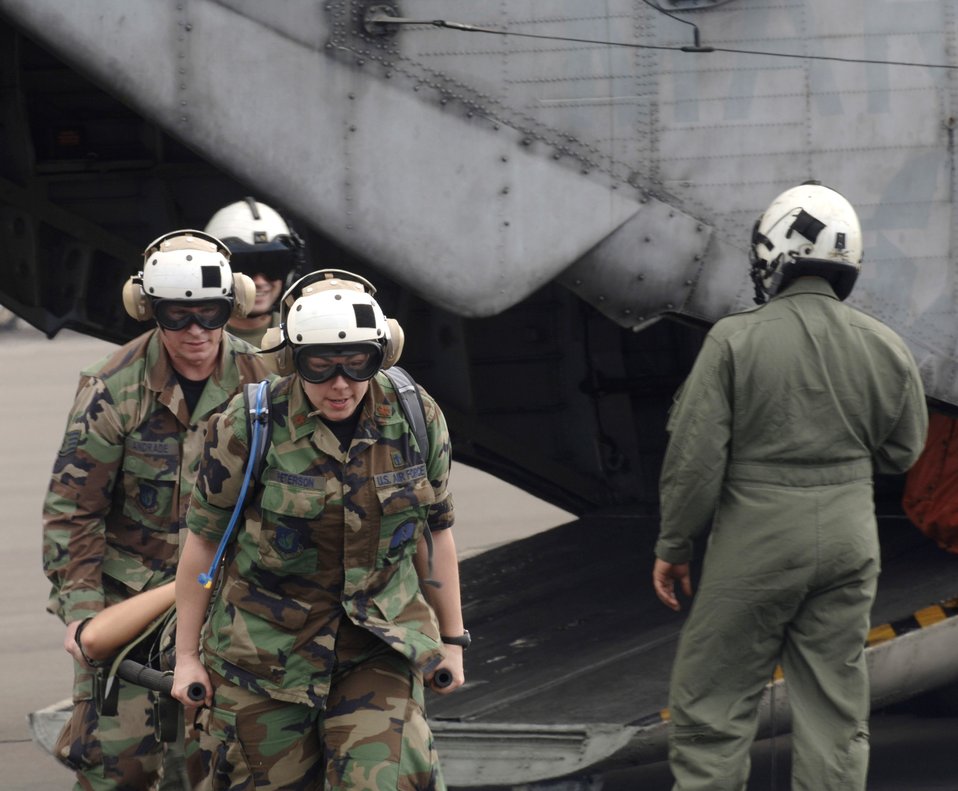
Pacific Lifeline tests humanitarian relief concept

Maj. Laura Peterson and Tech. Sgt. Marcus Andrade hone their helicopter evacuation skills during a Pacific Lifeline training exercise Jan. 30 at the Kona International Airport at Kona, Hawaii. The 363rd Heavy Mobile Helicopter Squadron, Kaneohe Marine Corps Base, Hawaii, provided a CH-53D Sea Stallion and aircrew members to provide realistic hands-on training. Major Peterson and Sergeant Andrade are from the 3rd Expeditionary Medical Squadron from Elmendorf Air Force Base, Alaska. More than 80 members of the 3rd EMEDS participated in the humanitarian assistance and disaster relief exercise that took place from three locations within the Hawaiian Islands Jan. 20 to Feb. 9.